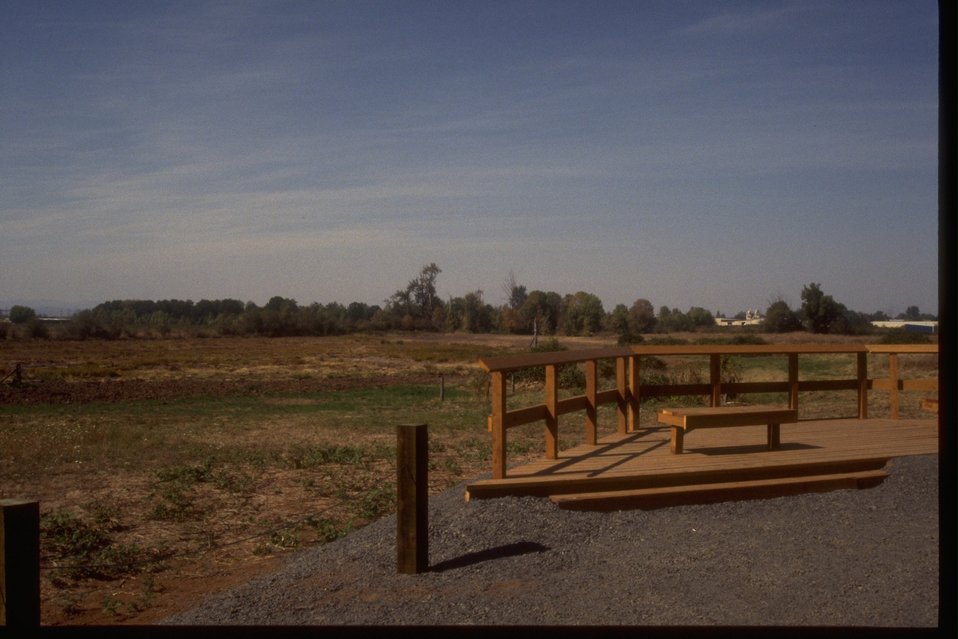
Wildlife viewing platform at the West Eugene Wetlands Project Site.